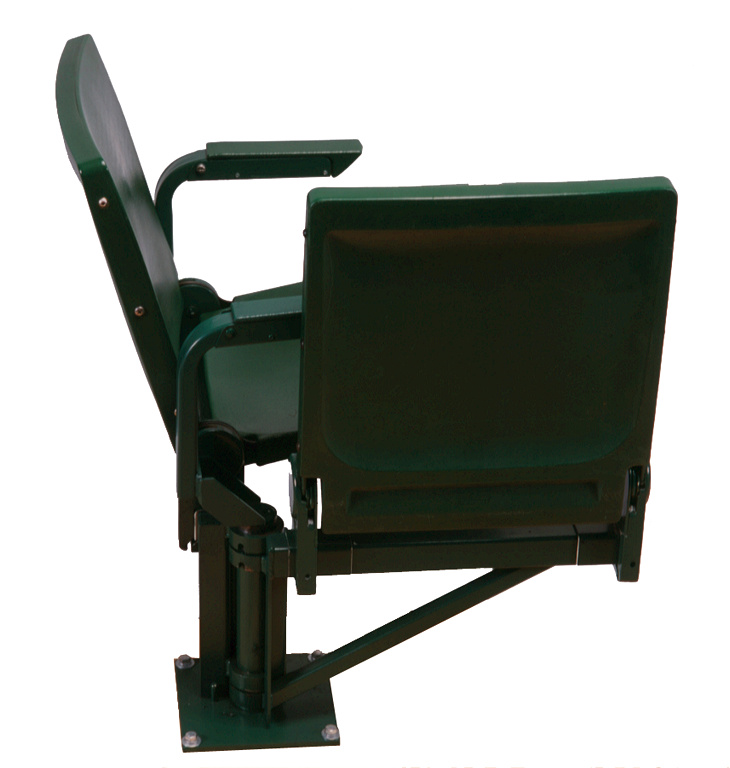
This was one of five images (PHIL# 9139 - 9143), depicting two rotating, folding stadium seats: one in the 'open' position; one in a closed, fully-rotated position. These seats provided a unique level of flexibility for patrons of spectator events, where fixed seats were typically installed. Designed to provide the same range of seating options to people who use wheelchairs or scooters, they were able to be installed in either newly constructed or modified projects. The design combined two seat assemblies mounted and articulated from a single post. This flexibility allowed people using wheelchairs to sit with friends and family members, and therefore, feel integrated with the general public. A walking person could also use a seat, fold it up, or swing it to the side, and in this way, exit the row or aisle behind, while not disturbing the occupants of adjacent seats.